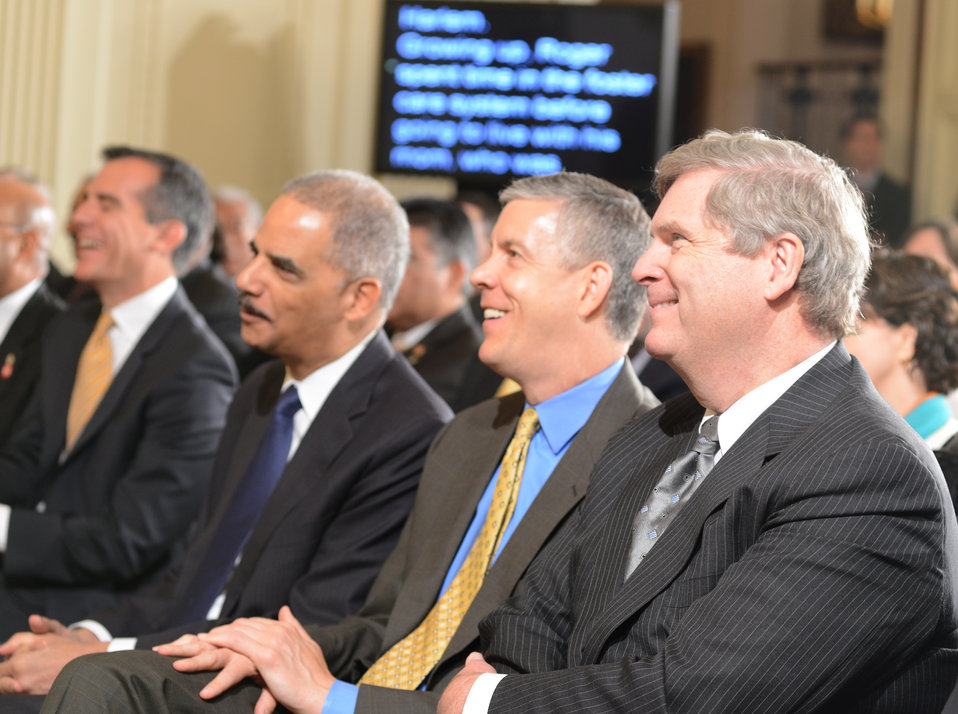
Agriculture Secretary Tom Vilsack listens to President Barack Obama announce the first five “Promise Zones,” located in San Antonio, TX, Philadelphia, PA, Los Angeles, CA, Southeastern Kentucky, and the Choctaw Nation of Oklahoma in the East Room of the White House on Thursday, Jan. 9, 2013. (Seated left of Secretary Vilsack is Secretary Education Secretary Arne Duncan, and Attorney General Eric Holder)